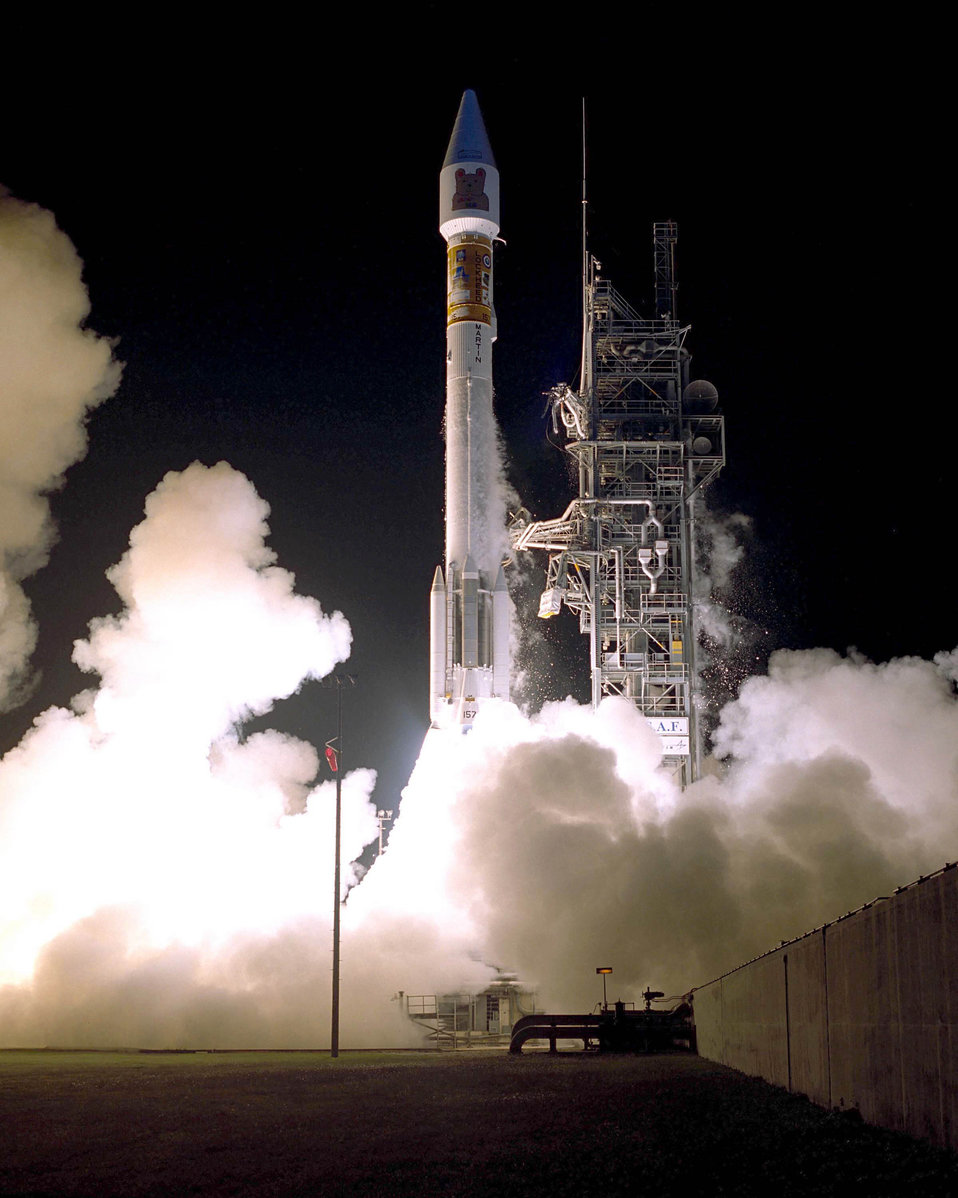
Atlas IIAS

FILE PHOTO -- The U.S. Air Force successfully launched an Atlas IIAS rocket Dec. 5 at 9:47 p.m. EST. The payload it lofted into space is a satellite designed, built and operated by the National Reconnaissance Office.